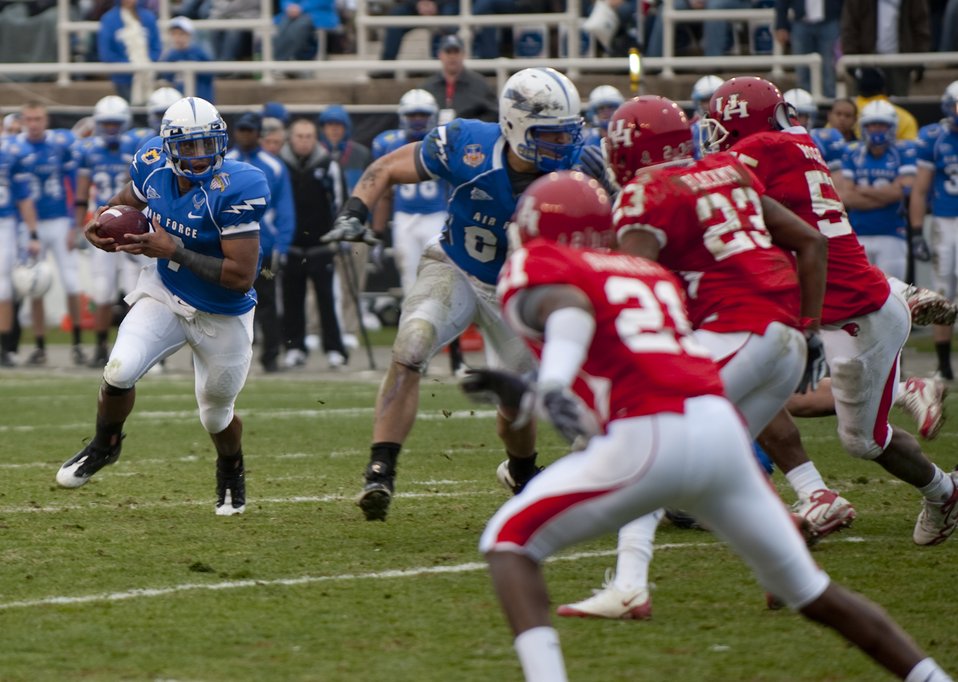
Armed Forces Bowl

Air Force Academy quarterback Jared Tew turns the corner for a first down during the Falcons' defeat of the University of Houston Cougars 47-20 during the seventh Bell Helicopter Armed Forces Bowl in Fort Worth, Texas, on Dec. 31, 2009.